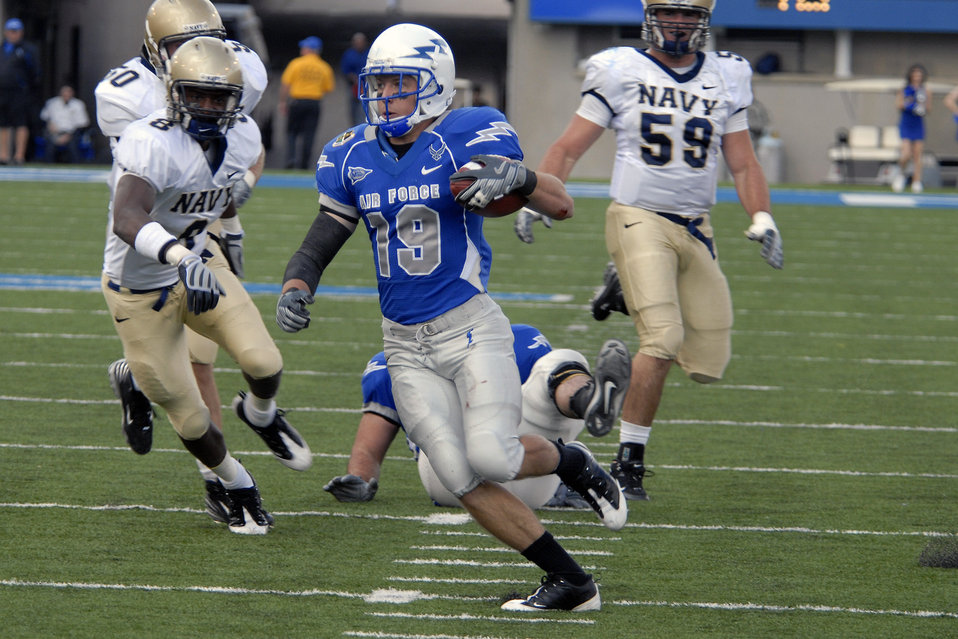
Football: Navy holds off Falcons

U.S. Air Force Academy wide receiver Ty Paffett runs for yardage during the Falcons Oct. 4 loss to the Navy Midshipmen, 33-27, at the Academy in Colorado.